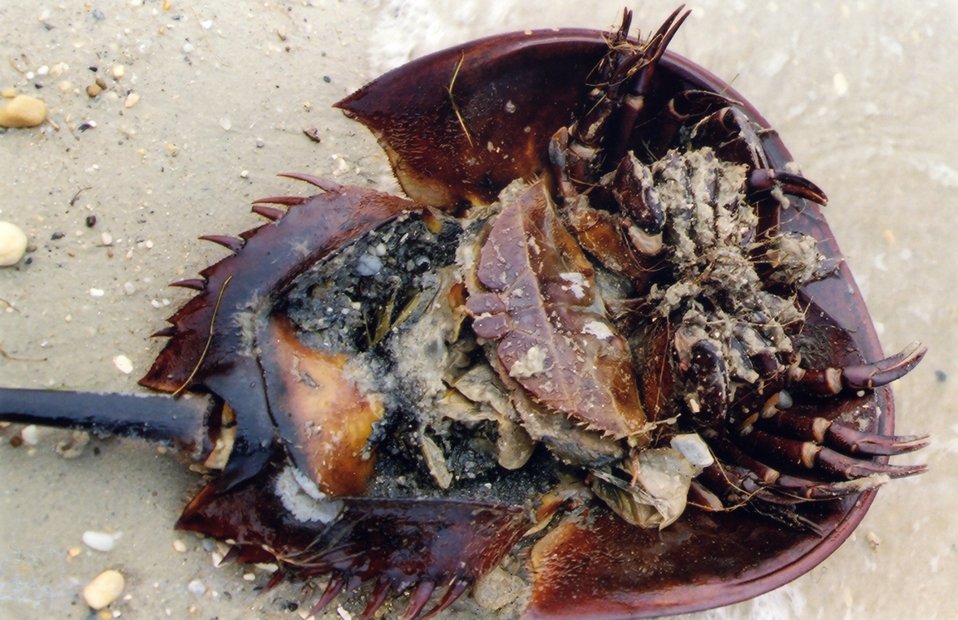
Large female horseshoe crab, washed ashore.